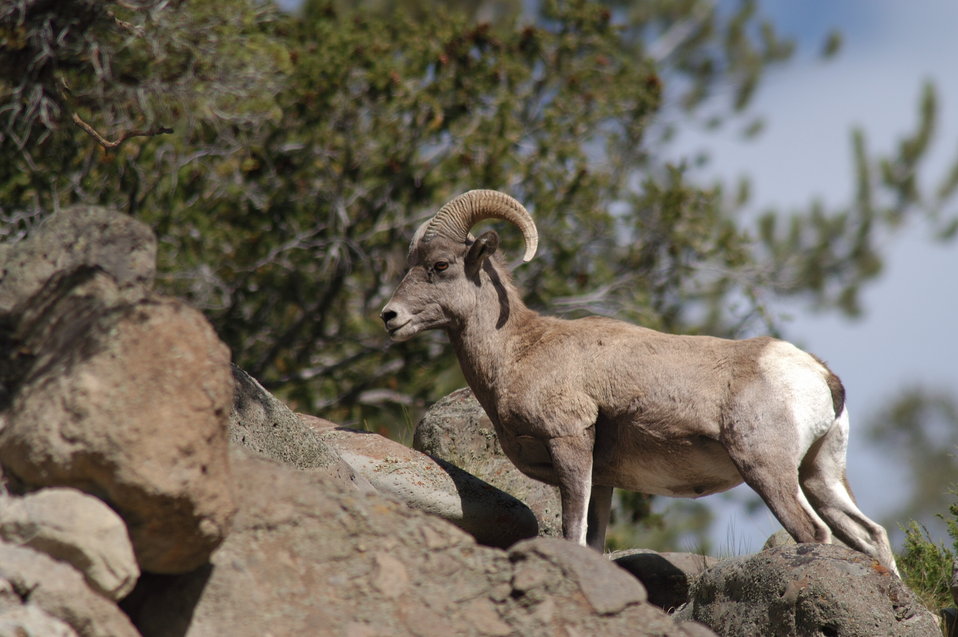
Rocky Mountain Bighorn Sheep

Bighorn sheep were reintroduced to CMR in the 1950s and in 1980. There are now around 200 sheep on the refuge.